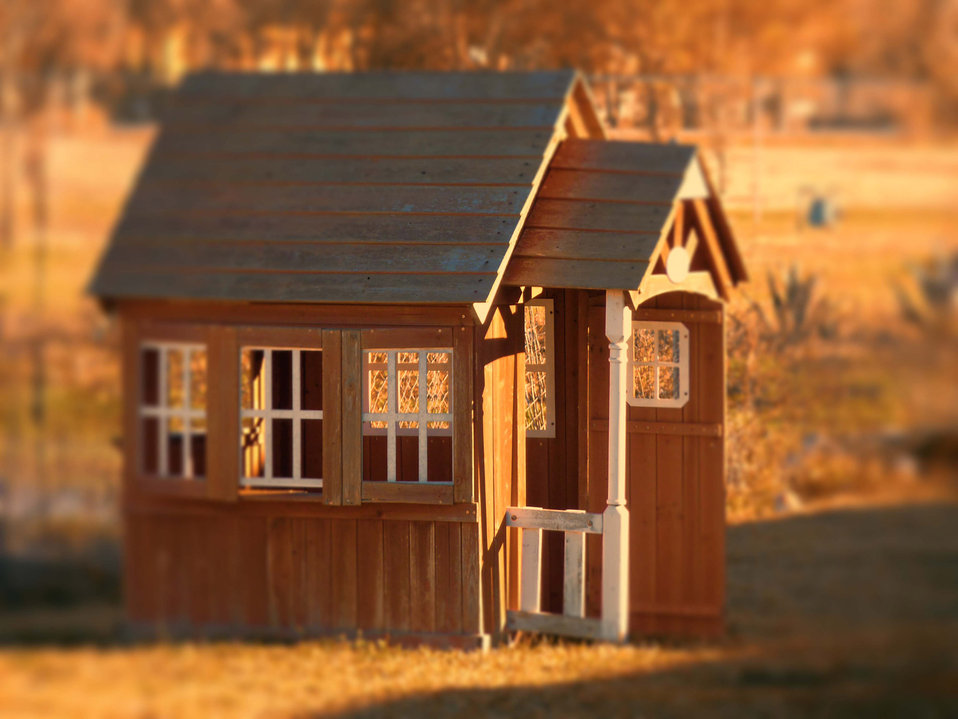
Little house

A little house. playhouse..